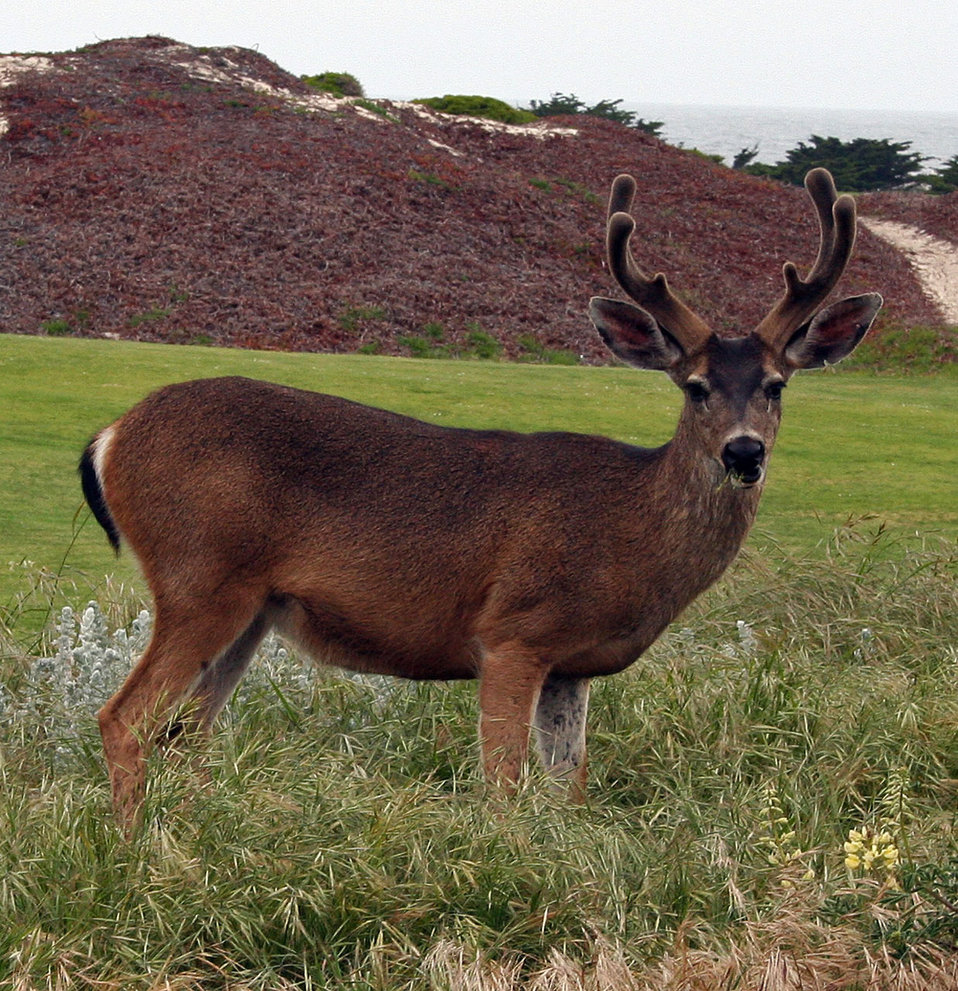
Buck eating on dune.